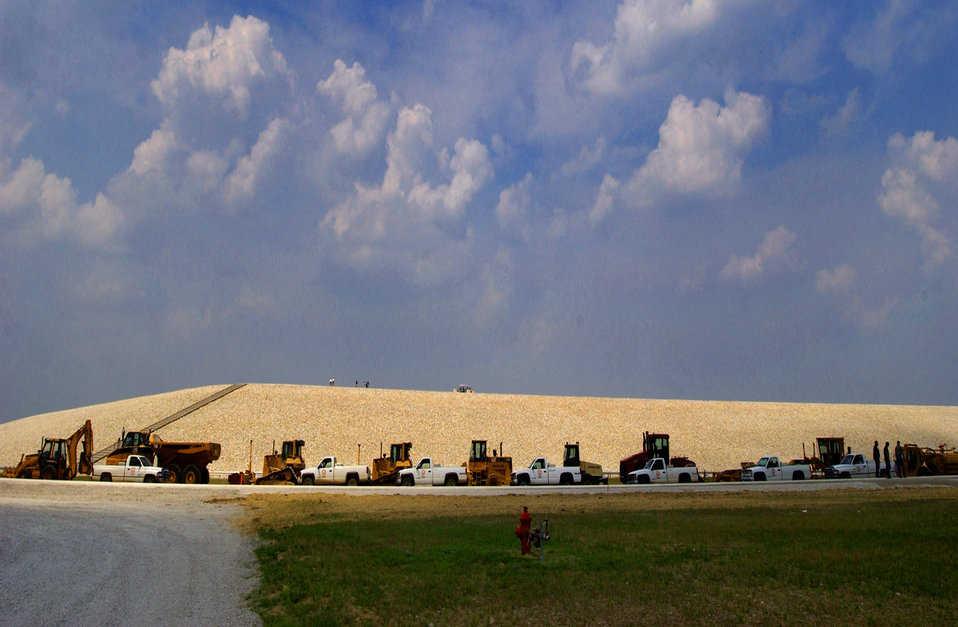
4

Weldon Spring